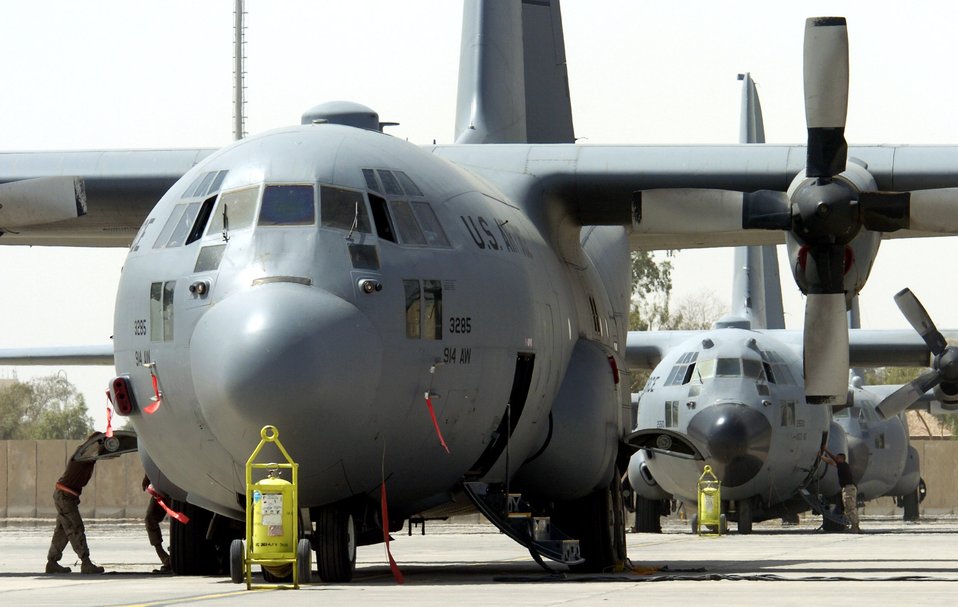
Maintenance unit keeps aircraft flying

Airmen from the 777th Expeditionary Airlift Squadron, prepare a C-130 Hercules for takeoff from Balad Air Base, Iraq on May 17, 2006. The squadron arrived at Balad in Jan. 2006. Since then, the unit has flown more than 3,700 sorties, moved more than 54,200 people and 11,790 tons of cargo. The unit is comprised of active duty, Guard and Reserve aircraft and Airmen.